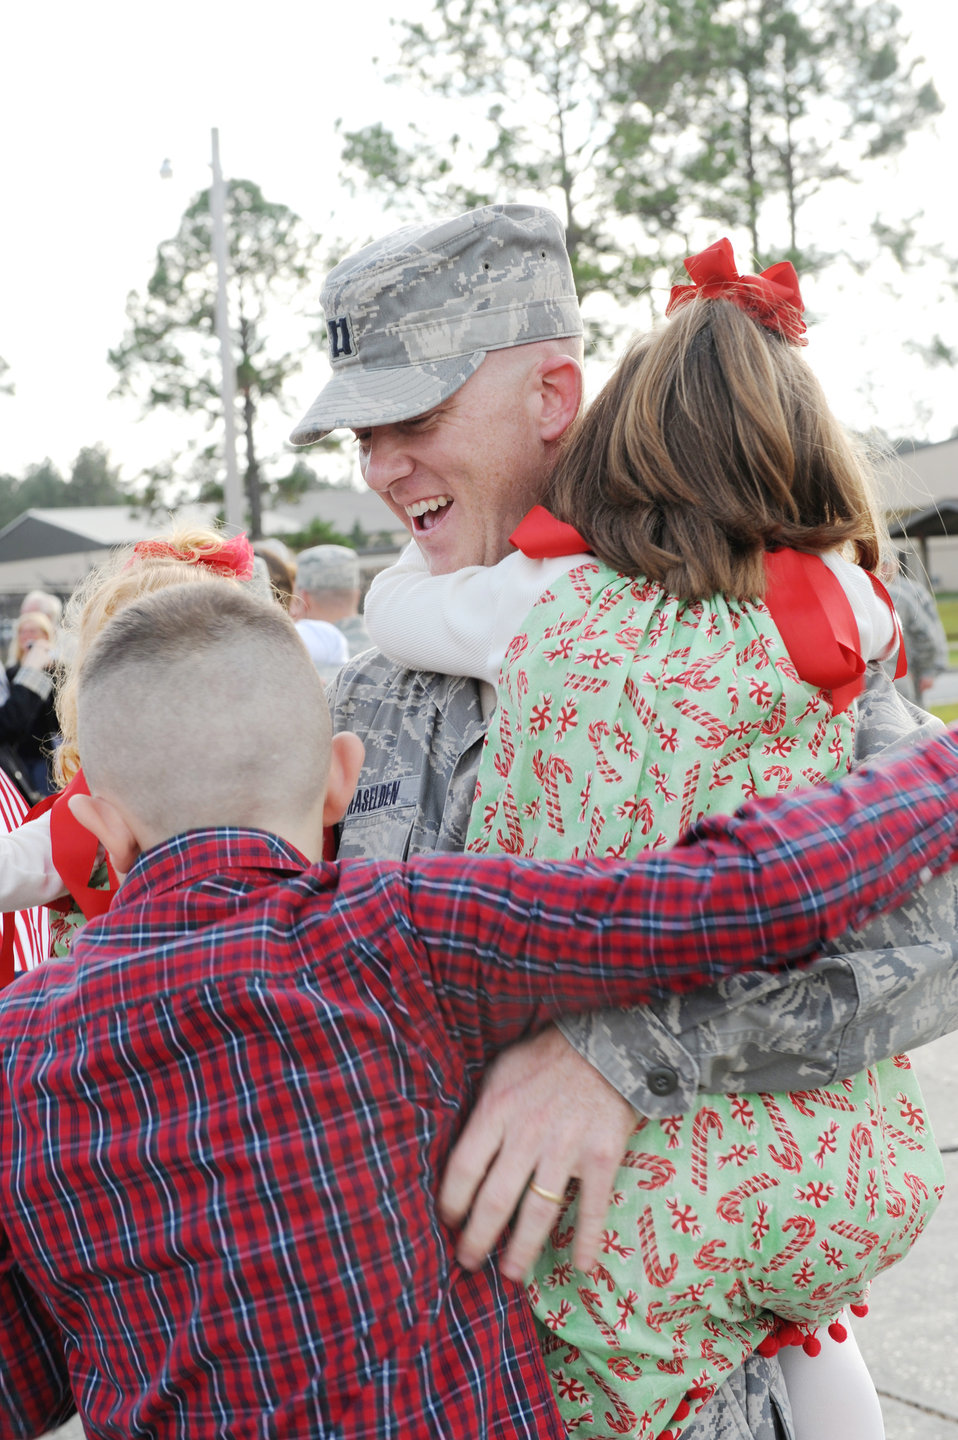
Moody Airmen return home

Capt. Scott Haselden, 822nd Security Forces Squadron member, gets a big hug from his children after returning home from a deployment to Camp Bucca, Iraq, Dec. 8, 2009, at Moody Air Force Base, Ga.